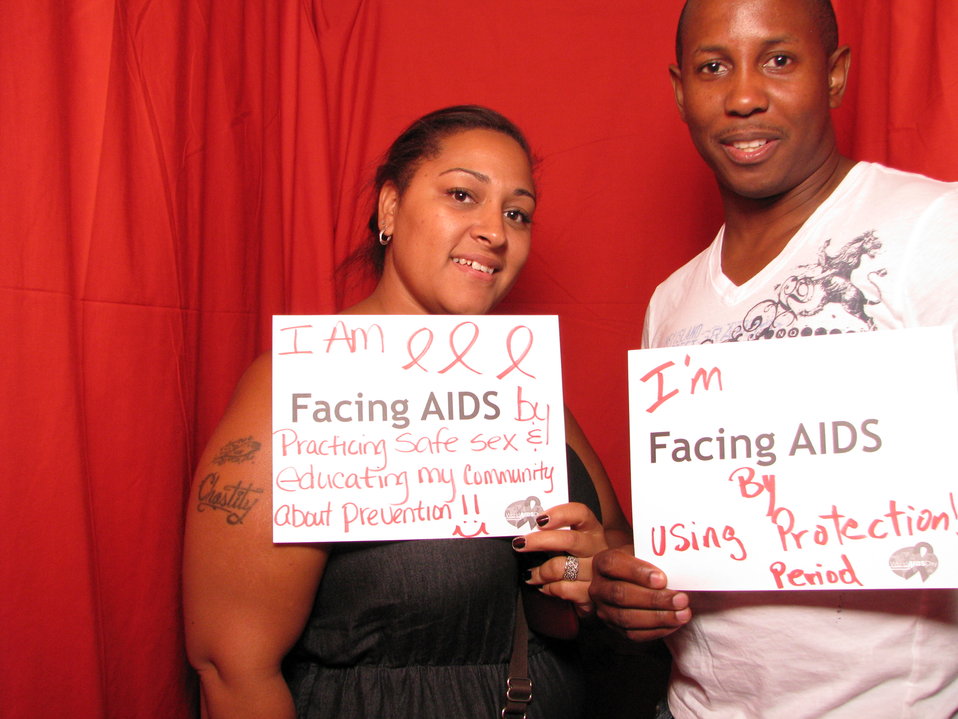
I am FACING AIDS by practicing safe sex and educating my community about prevention!! I'm FACING AIDS by using protection! Period.

From the AIDS.gov photo booth at the U.S. Conference on AIDS, September 2010 (Orlando, FL).